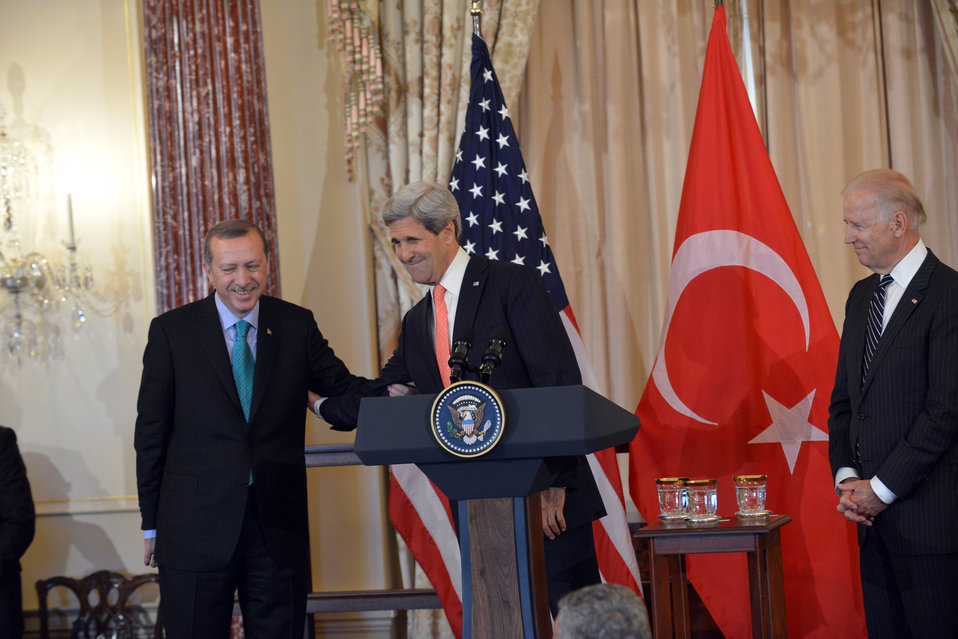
Secretary Kerry Delivers Remarks in Honor of Turkish Prime Minister Erdogan

U.S. Secretary of State John Kerry, with U.S. Vice President Joseph Biden, right, delivers remarks in honor of Turkish Prime Minister Recep Tayyip Erdogan at the U.S. Department of State in Washington, D.C., on May 16, 2013.